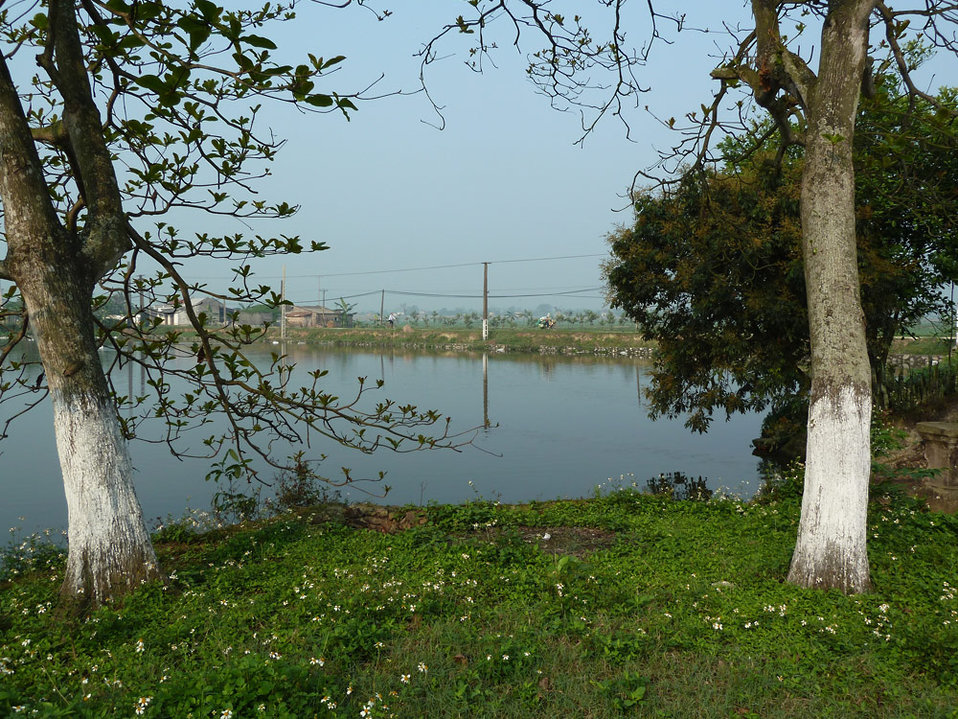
Residents in Vietnam's Tien Ngoai Commune, Duy Tien District, Ha Nam Province, discuss ways to prevent and control avian and pandemic influenza.